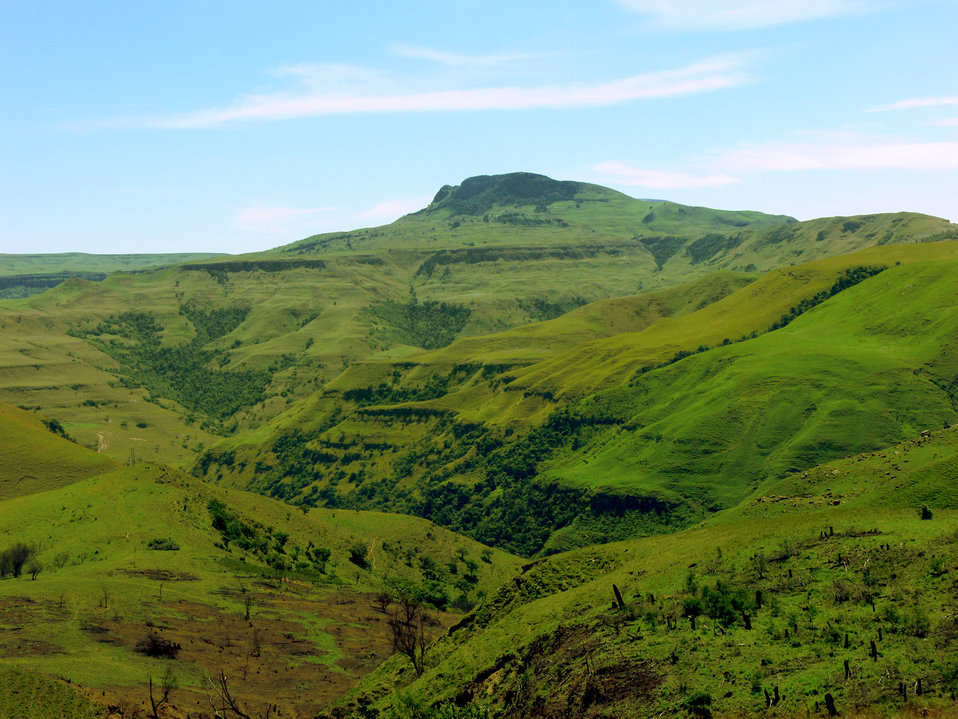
Valley of a 1000 hills

Small part of the famous valley of a 1000 hills in zululand, south africa.